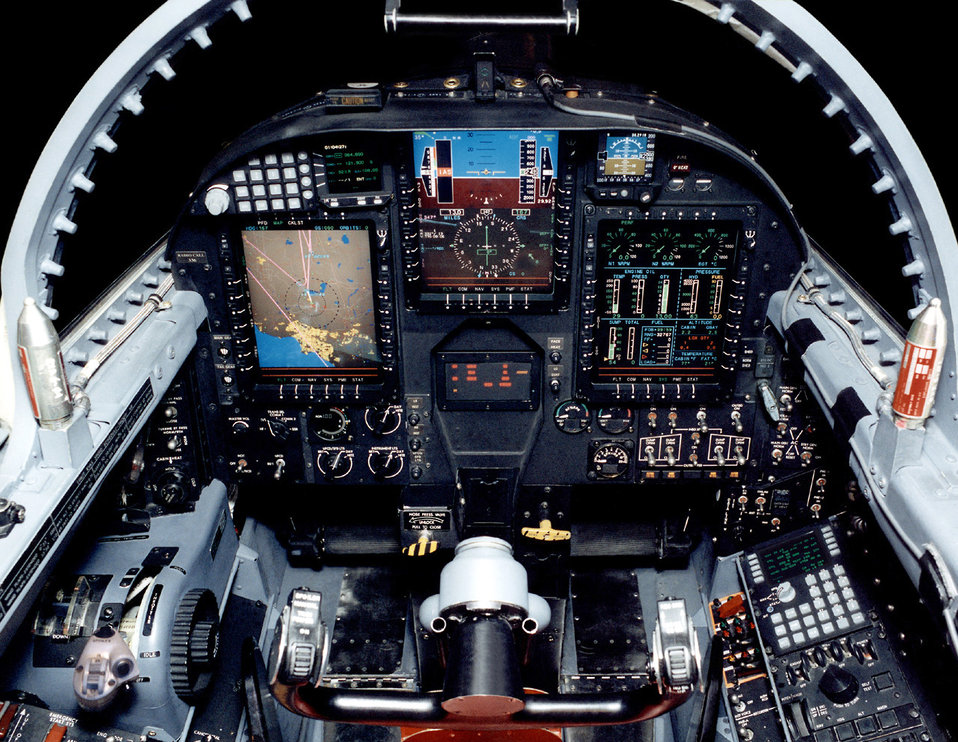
Dragon Lady Cockpit

WRIGHT-PATTERSON AIR FORCE BASE, Ohio -- Upgraded with more than $1.7 billion in new avionics, engines and sensors at regular intervals throughout its 48-year lifetime, the U-2